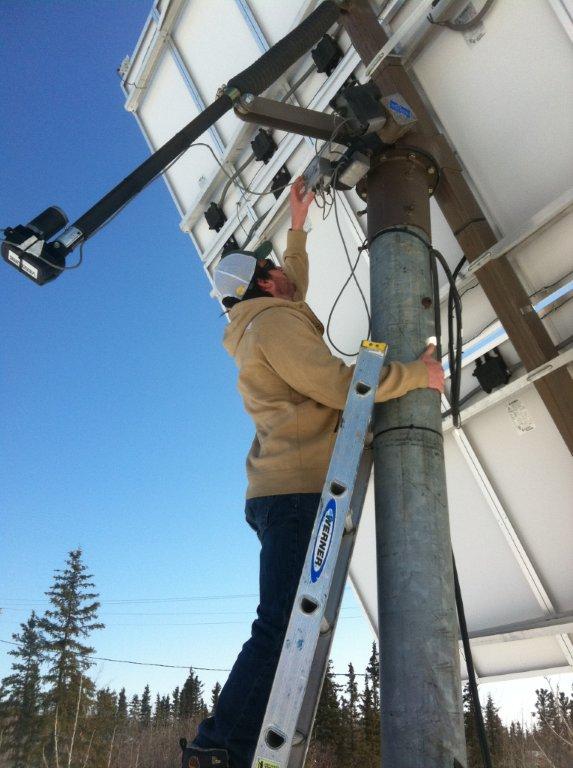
Repairing the tracking motor on a PV array

May 23, 2012 - Alex Dane of NREL repairs a Solar PV array in the native village of Venetie, Alaska, as part of the Office of Indian Energy Strategic Technical Assistance Response Team (START) Program.